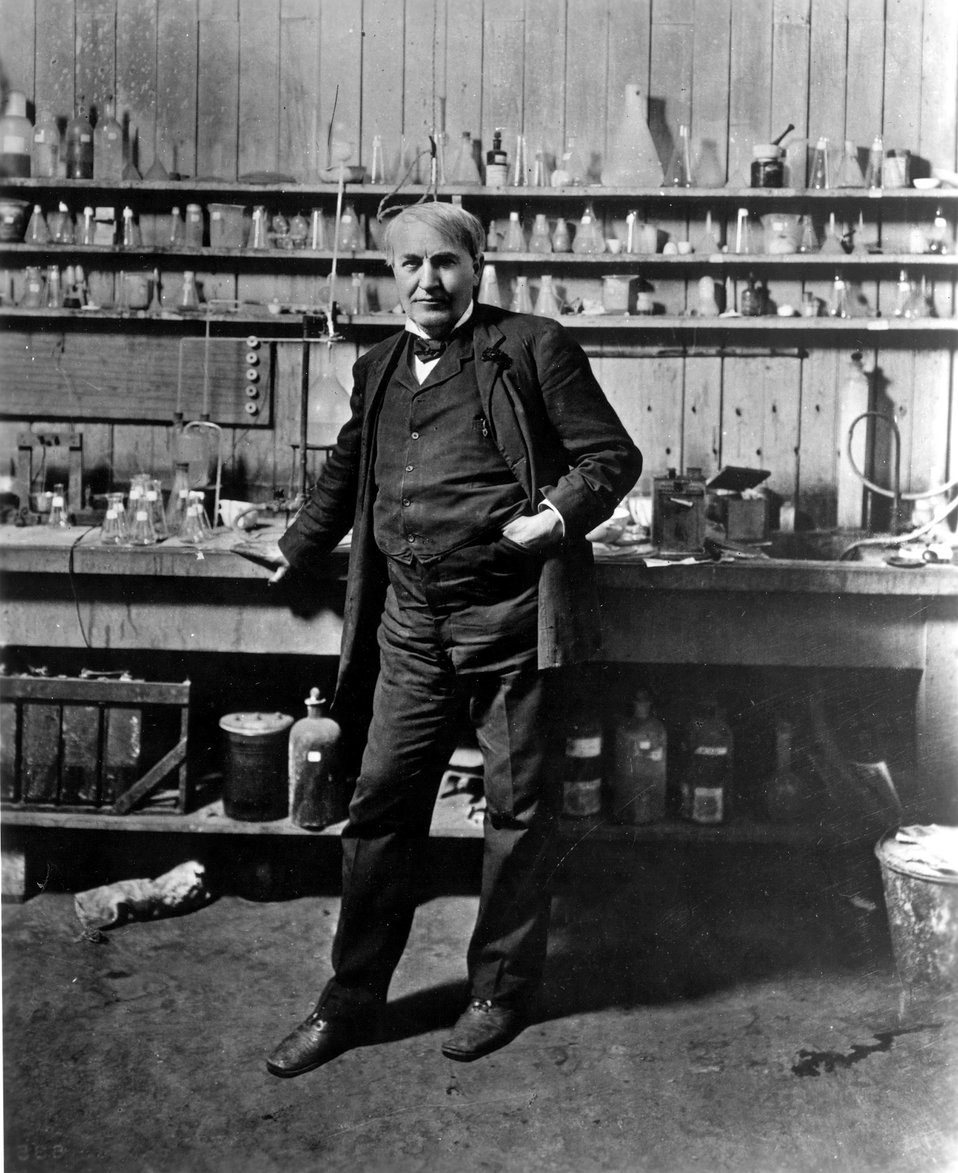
T.A. Edison in chemical lab, 1906.